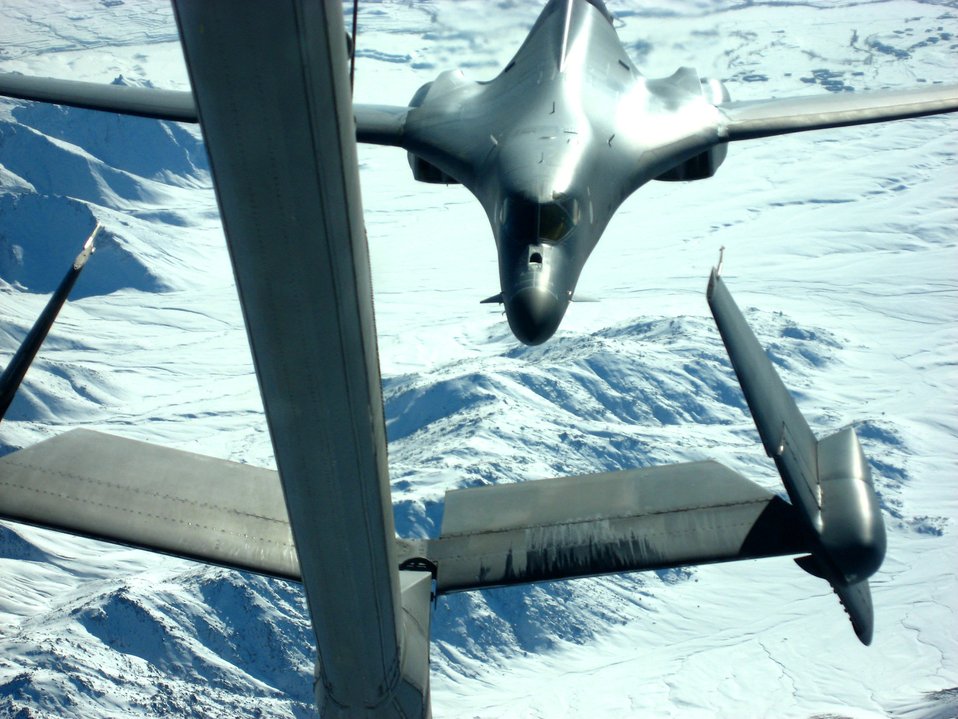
Gas and go

A B-1B Lancer needing fuel pulls up behind a KC-10 Extender flying over Afghanistan Dec. 14. The tanker is from the 380th Air Expeditionary Wing, home of the largest air refueling wing in Southwest Asia. Unit aircrews fly KC-10s and KC-135 Stratotankers in support of wartime operations.